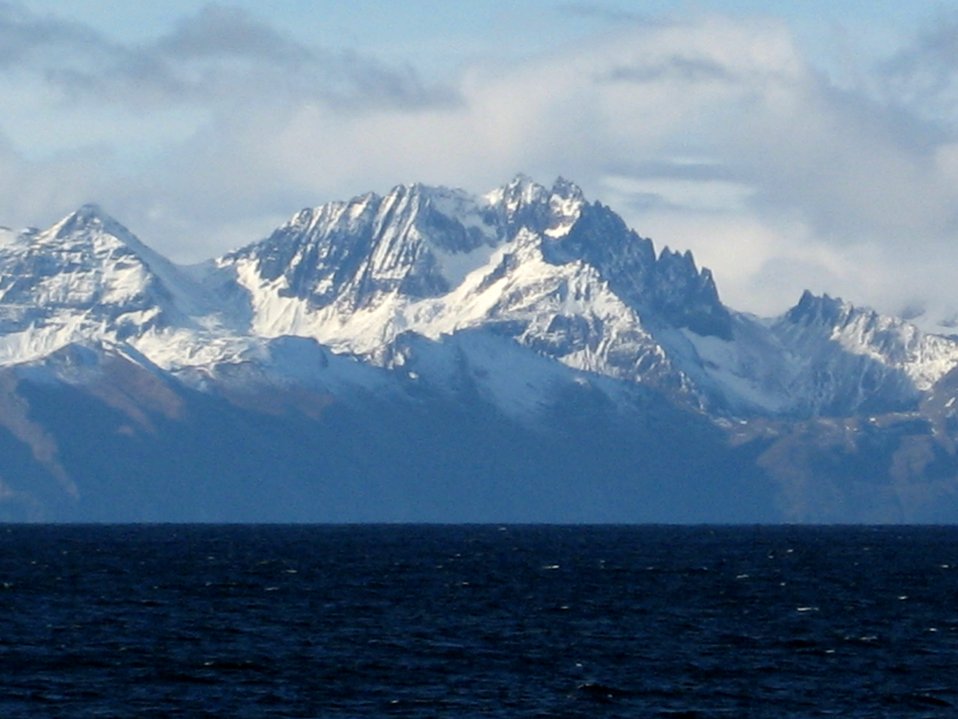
A scene along the Alaska Peninsula.